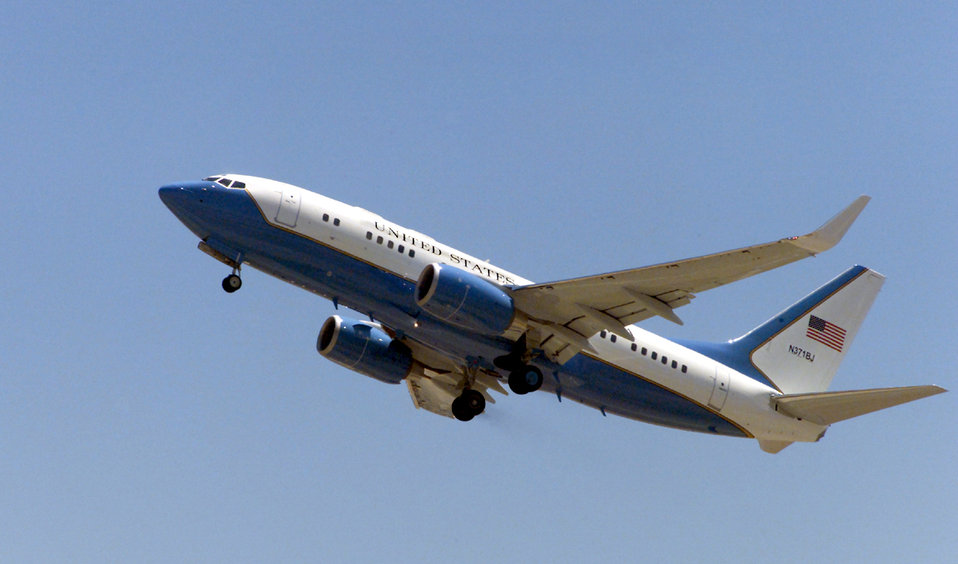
C-40

FILE PHOTO -- The C-40 B/C provides safe, comfortable and reliable transportation for U.S. leaders to locations around the world. The C-40B's primary customers are the combatant commanders and C-40C customers include members of the Cabinet and Congress. The aircraft also perform other operational support missions.